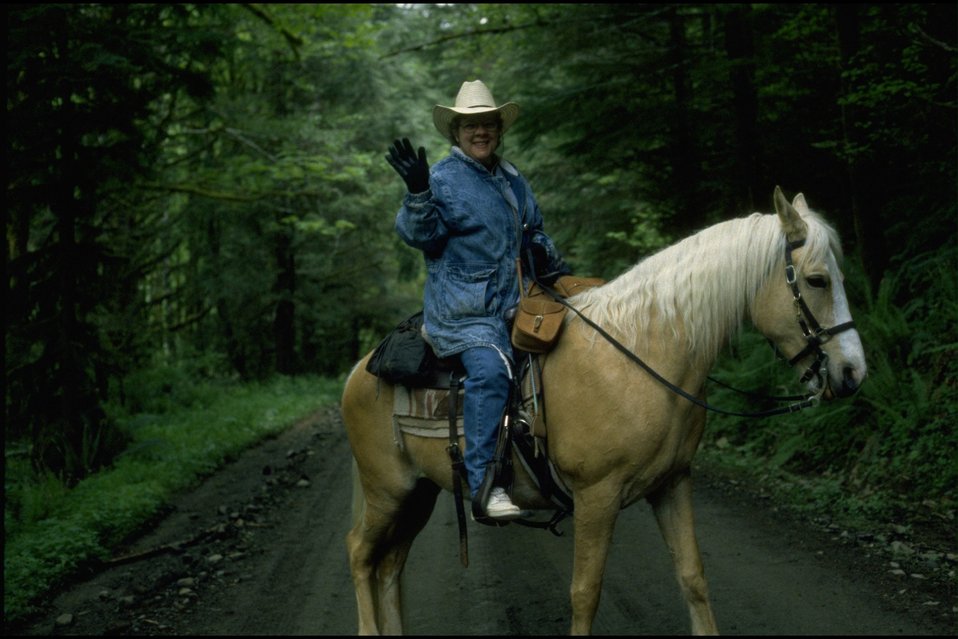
Horse Poker Ride.